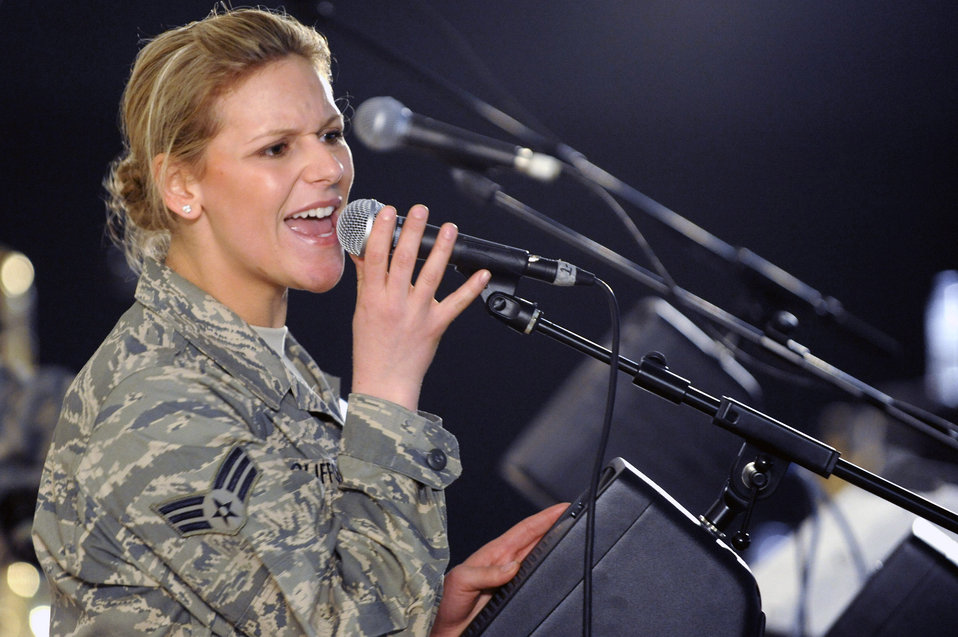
Belting one out

Vocalist Senior Airman Courtney Clifford performs March 9 at a forward base in Southwest Asia. The Air Force Central Command Band